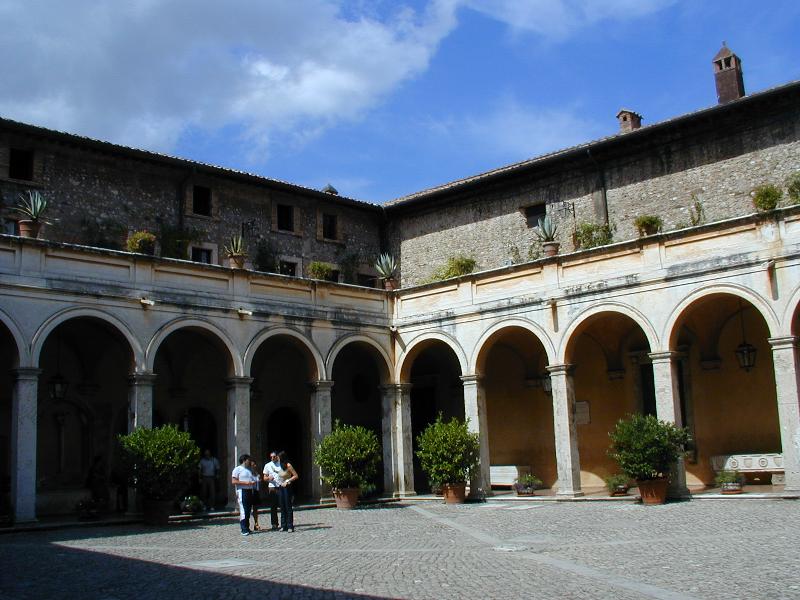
000910 tivoli v d este 01 cortile